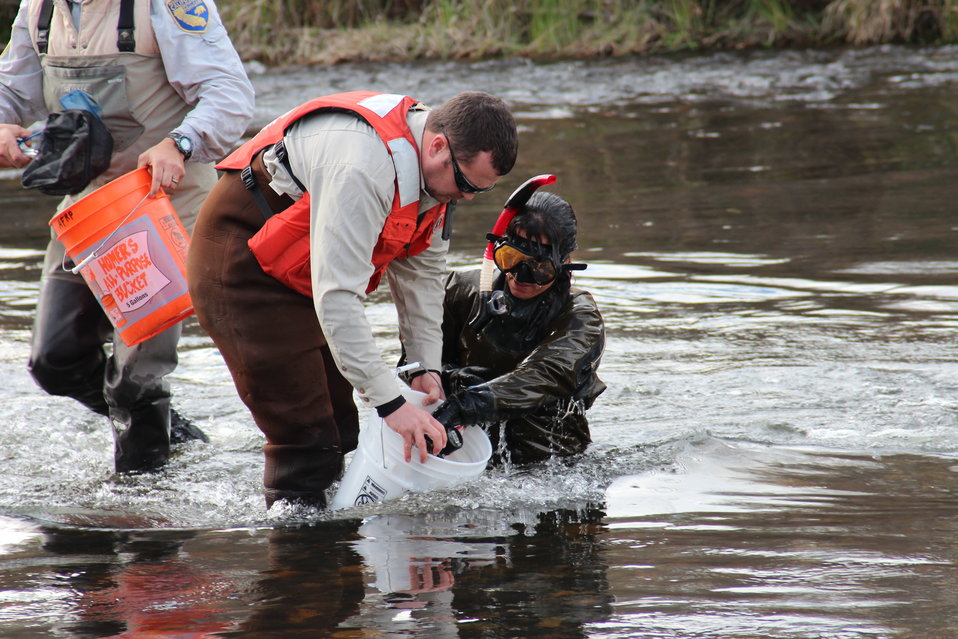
After allowing eggs to hatch the tubes are removed from the San Joaquin

Tubes are placed in plastic buckets and carried to shore to be opened and teams count the number of hatched eggs.